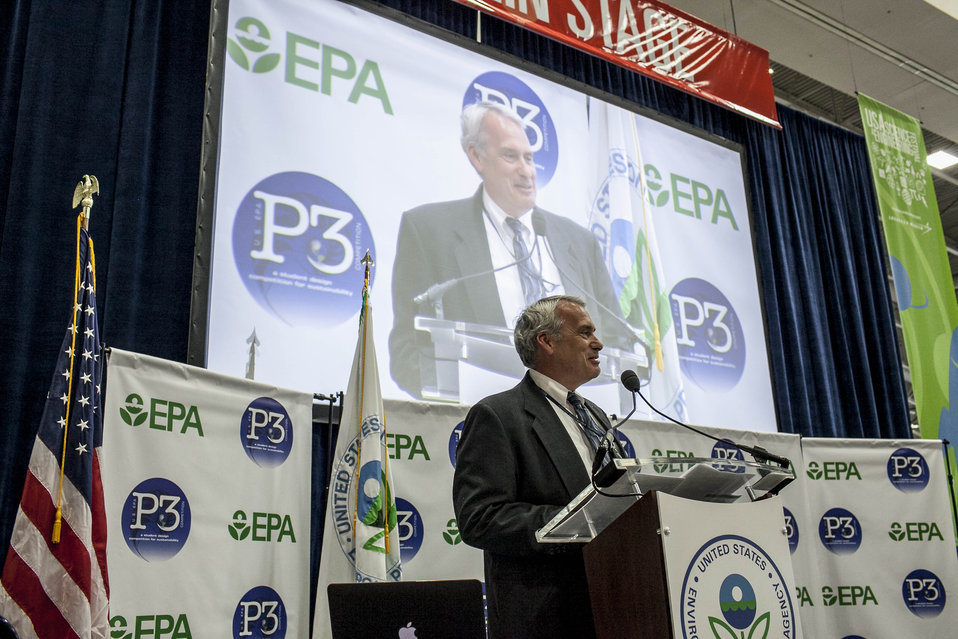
2014 P3 Competition

EPA’s Acting Assistant Administrator for R&D, Lek Kadeli, welcomes the competing teams to the 2014 EPA P3 Awards Ceremony before announcing this year’s winners.